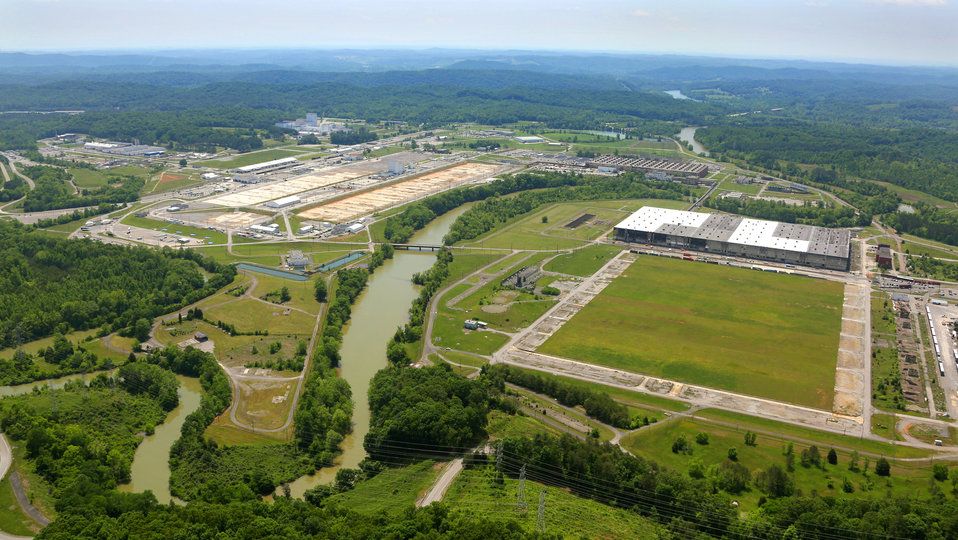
ETTP aerial 2014 Oak Ridge

JRO 0470 ORNL photo Jason Richards 5-20-2014 Oak Ride Tennessee